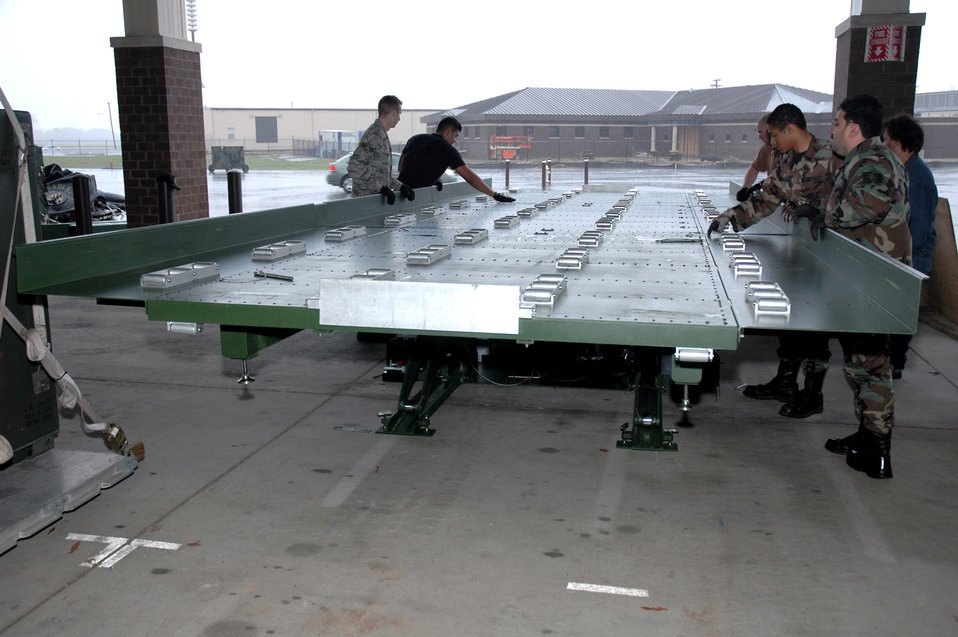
New hydraulic lift aims to boost contingency capabilities

Airmen from the 816th Global Mobility Squadron at McGuire Air Force Base, N.J., assemble a deployable-hydraulic lift as part of a demonstration for the Air Mobility Battlelab. The AMB, located in the U.S. Air Force Expeditionary Center on Fort Dix, N.J., coordinated the demonstration as part of the Deployable-Hydraulic Lift Initiative which aims to help contingency response Airmen have an easier time moving cargo in deployed locations.